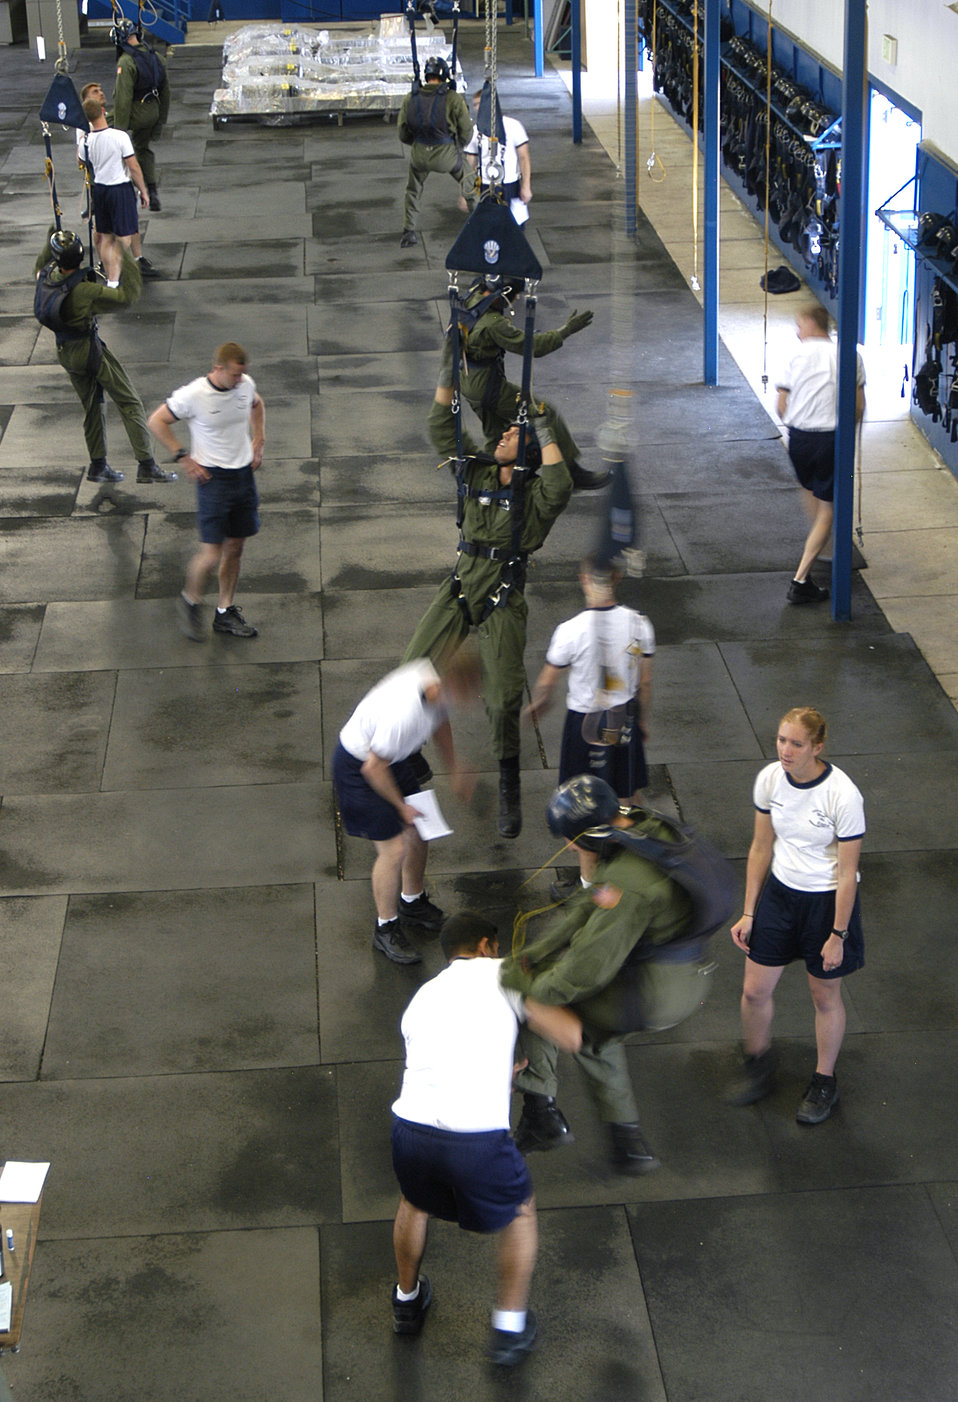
Earning those jump wings

Third-class cadets at the U.S. Air Force Academy receive parachute training June 27 during Airmanship 490, Basic Parachuting, an airmanship program where cadets earn their basic jump wings after successfully completing five free-fall jumps.